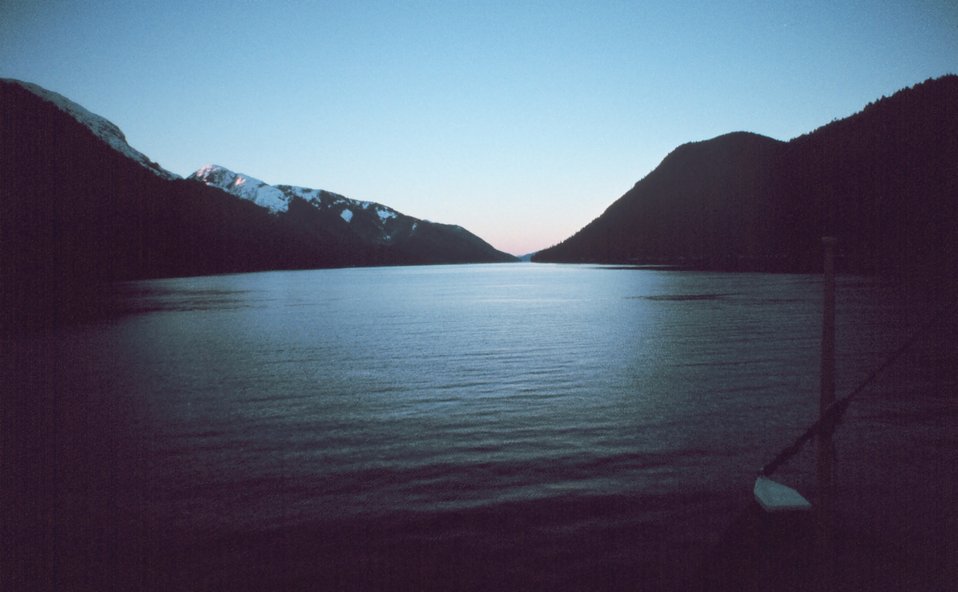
British Columbia